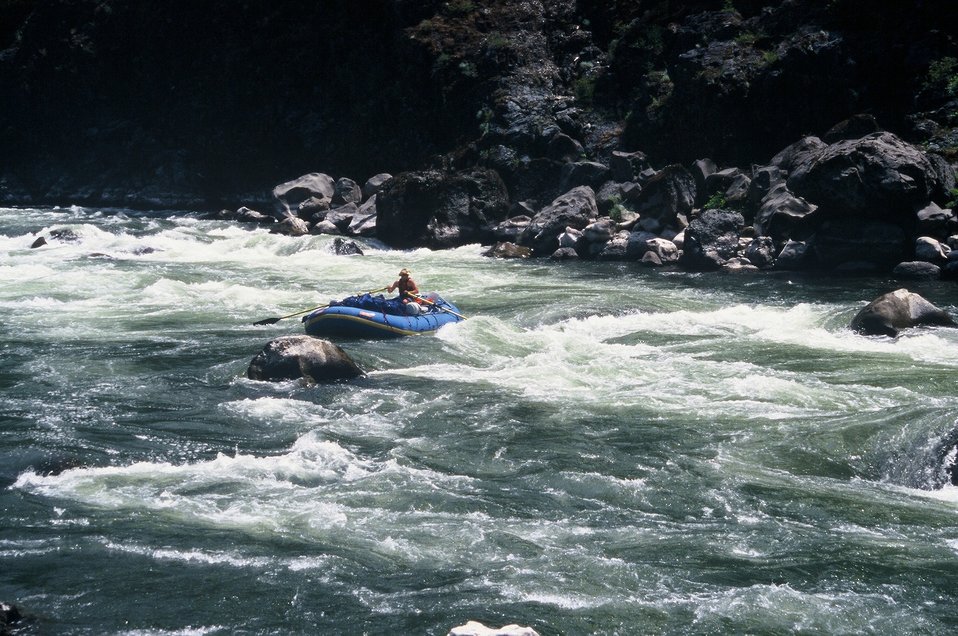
Wild section of the Rogue River from Grave Creek to Foster Bar May 19 to May 22.